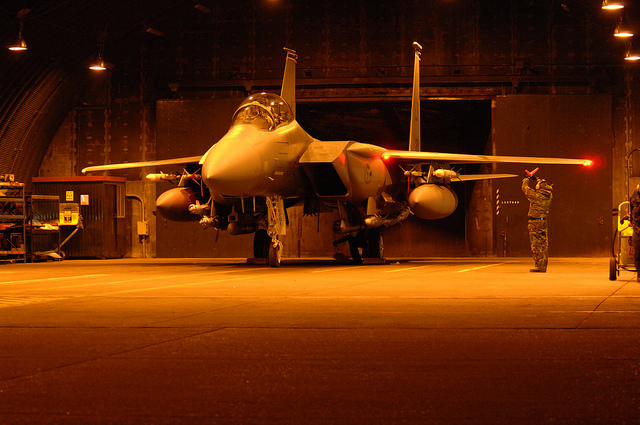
U.S. Air Force aircraft strike Libya

An F-15E Strike Eagle prepares to taxi prior to departing Royal Air Force Lakenheath, England, March 19, 2011. Units from the 48th Fighter Wing are conducting pre-deployment procedures in support of Operation Odyssey Dawn.